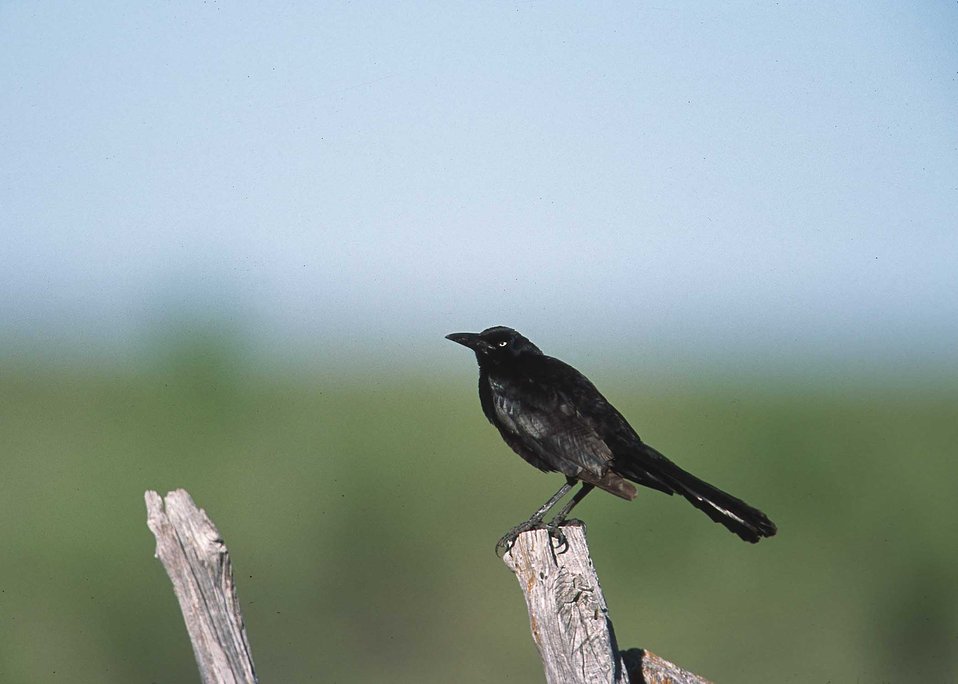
Great tailed grackle in New Mexico.